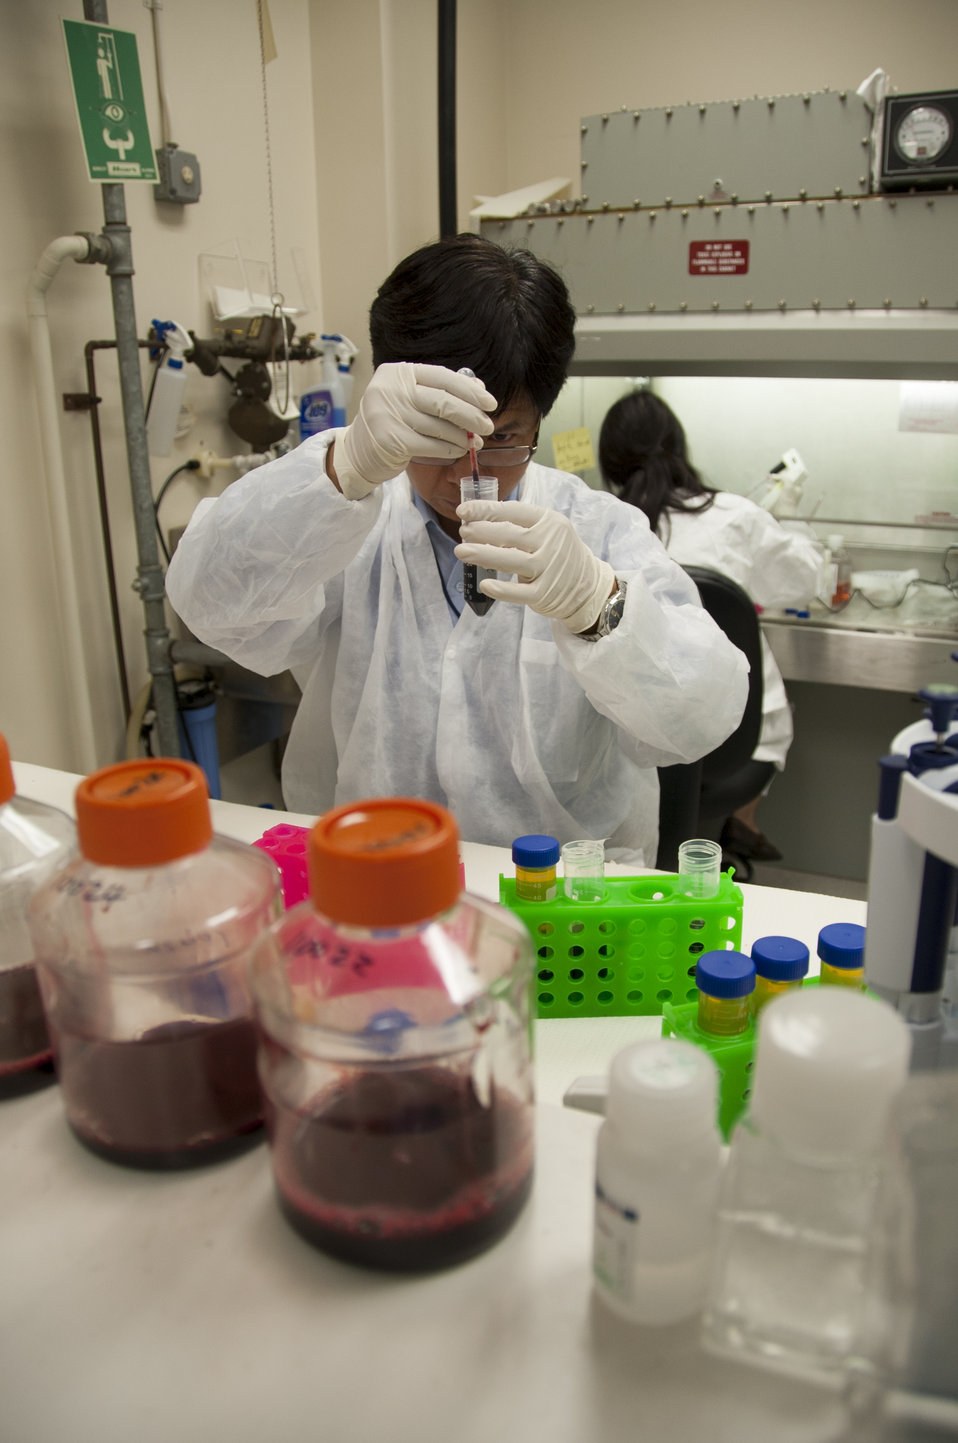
Blood Research: Saving Lives (8533)

Jason Liu, Ph.D., a laboratory chief at FDA’s Office of Blood Research and Review, collects white blood cells from processed whole blood. FDA is responsible for the safety of our nation’s blood supply and is at the forefront of evaluating and encouraging innovative technologies for protecting it.

Read this Consumer Update to learn more: Advances in Saving Lives with Blood